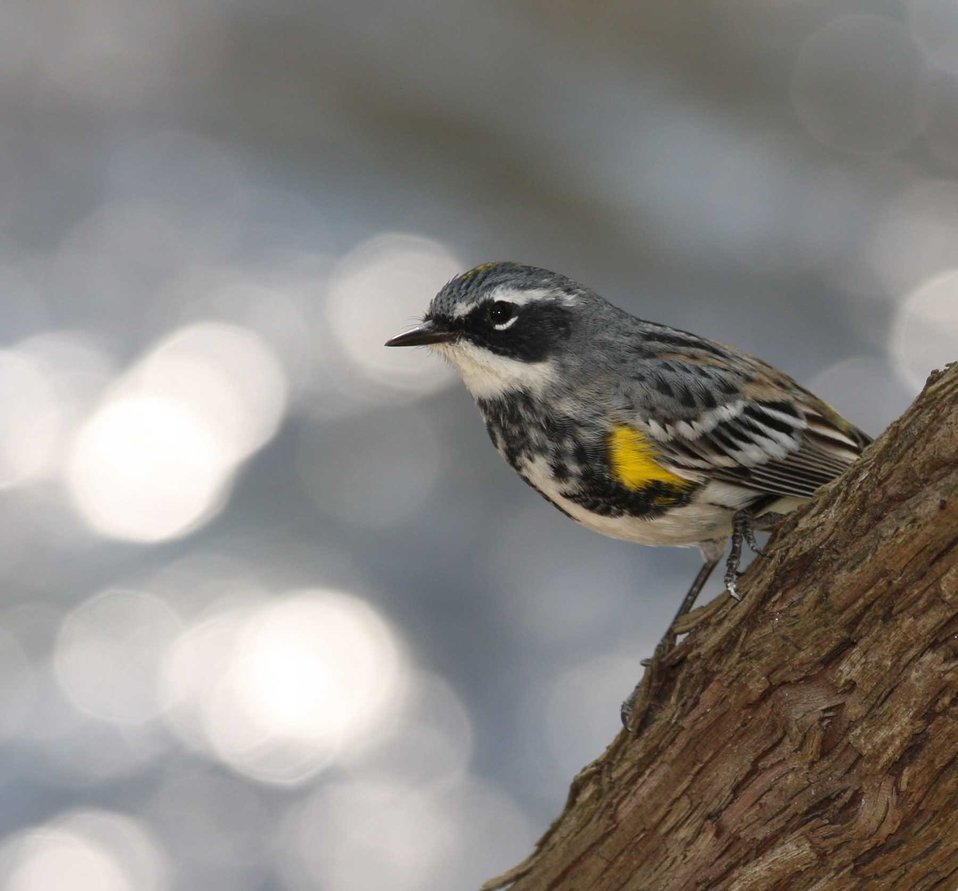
Yellow-rumped warbler at John Heinz National Wildlife Refuge in Philadelphia, Pennsylvania.